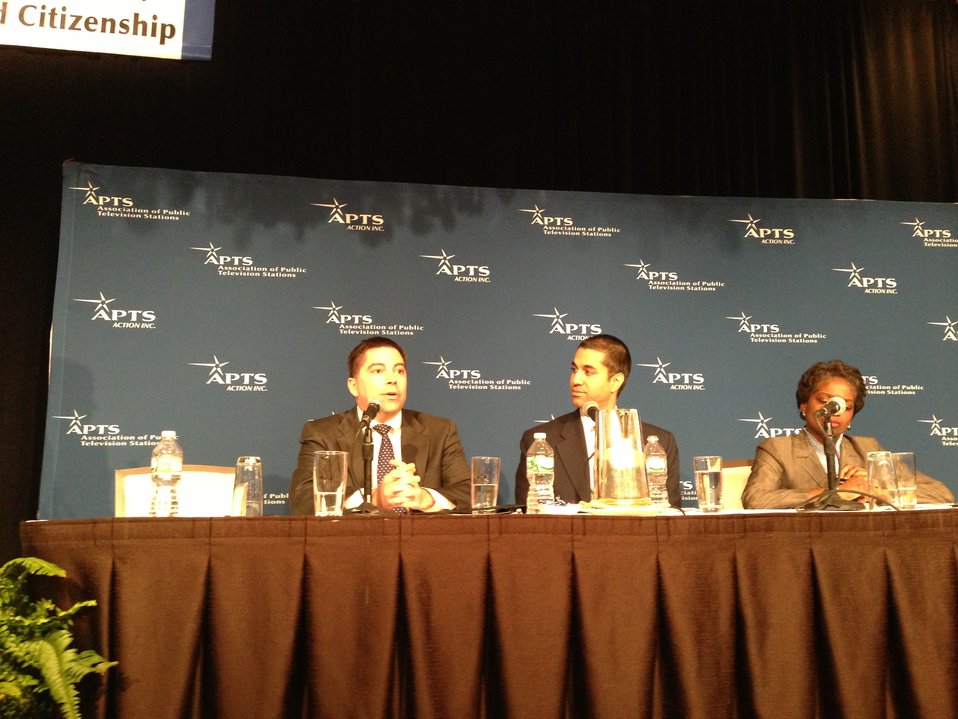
2.24.2014 APTS Public Media Summit

Commissioners O'Rielly, Pai and Clyburn participate on panel at APTS Public Media Summit February 24, 2014